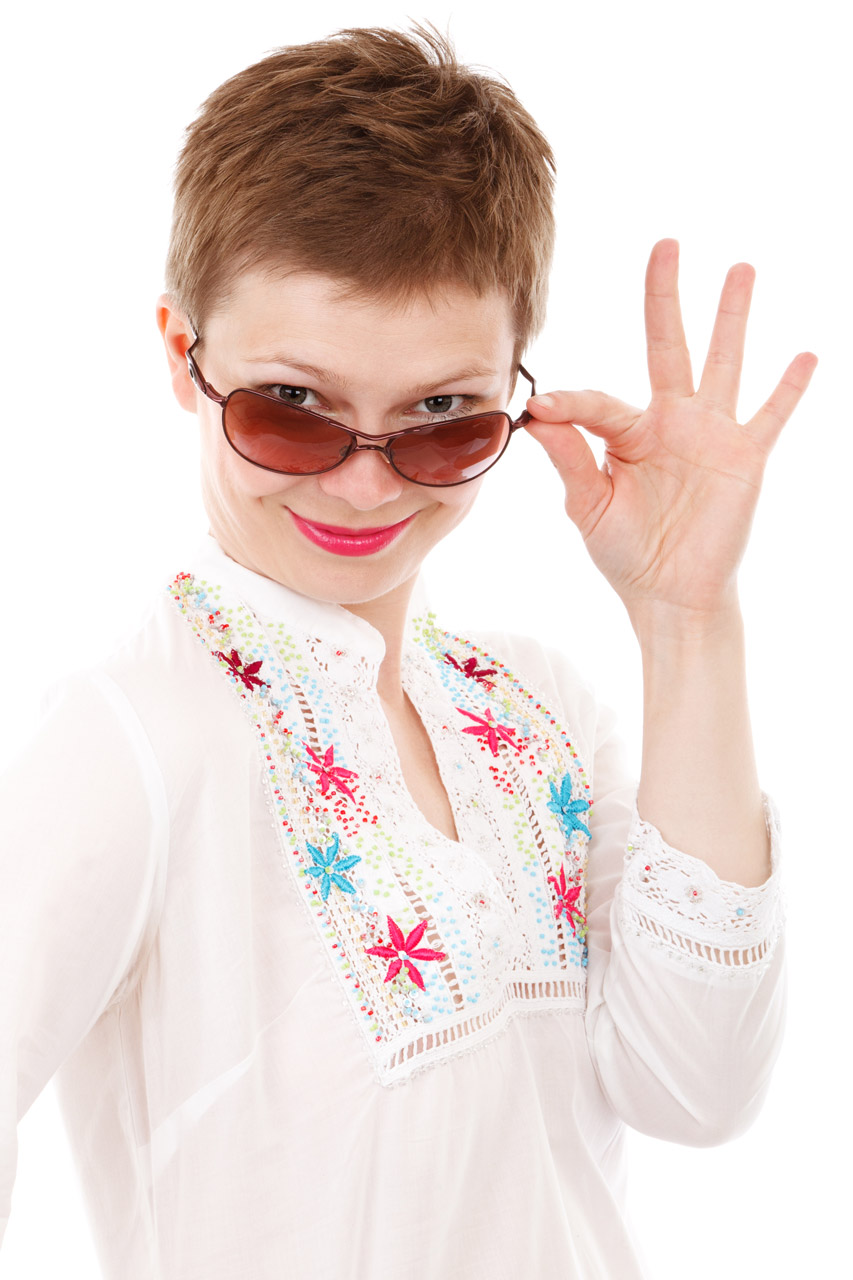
Smiling woman with sunglasses

Young smiling woman looking through sunglasses in summer clothes isolated on white background.